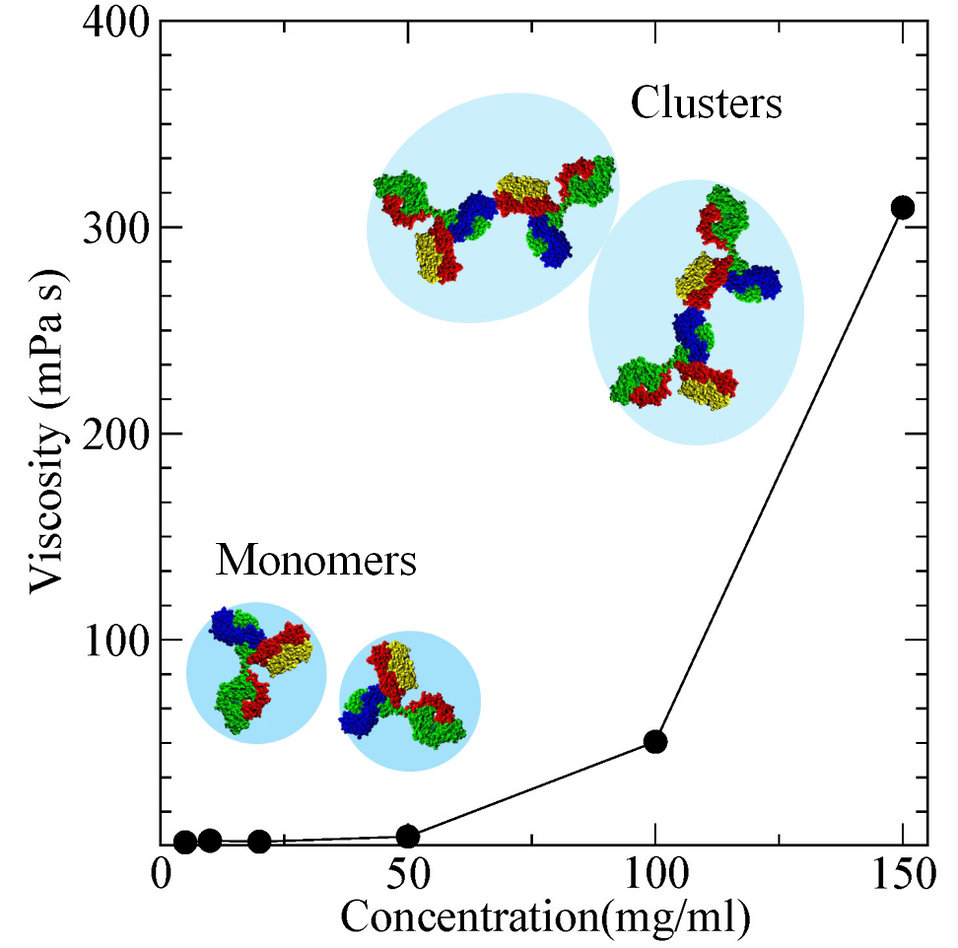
Monoclonal antibodies (mAbs)

Increasing the concentration of MAb proteins in solution makes them pair off, forming clusters of two MAb molecules. This recent discovery could help scientists deal with these proteins' high viscosity, which is commonly a barrier to drug development.